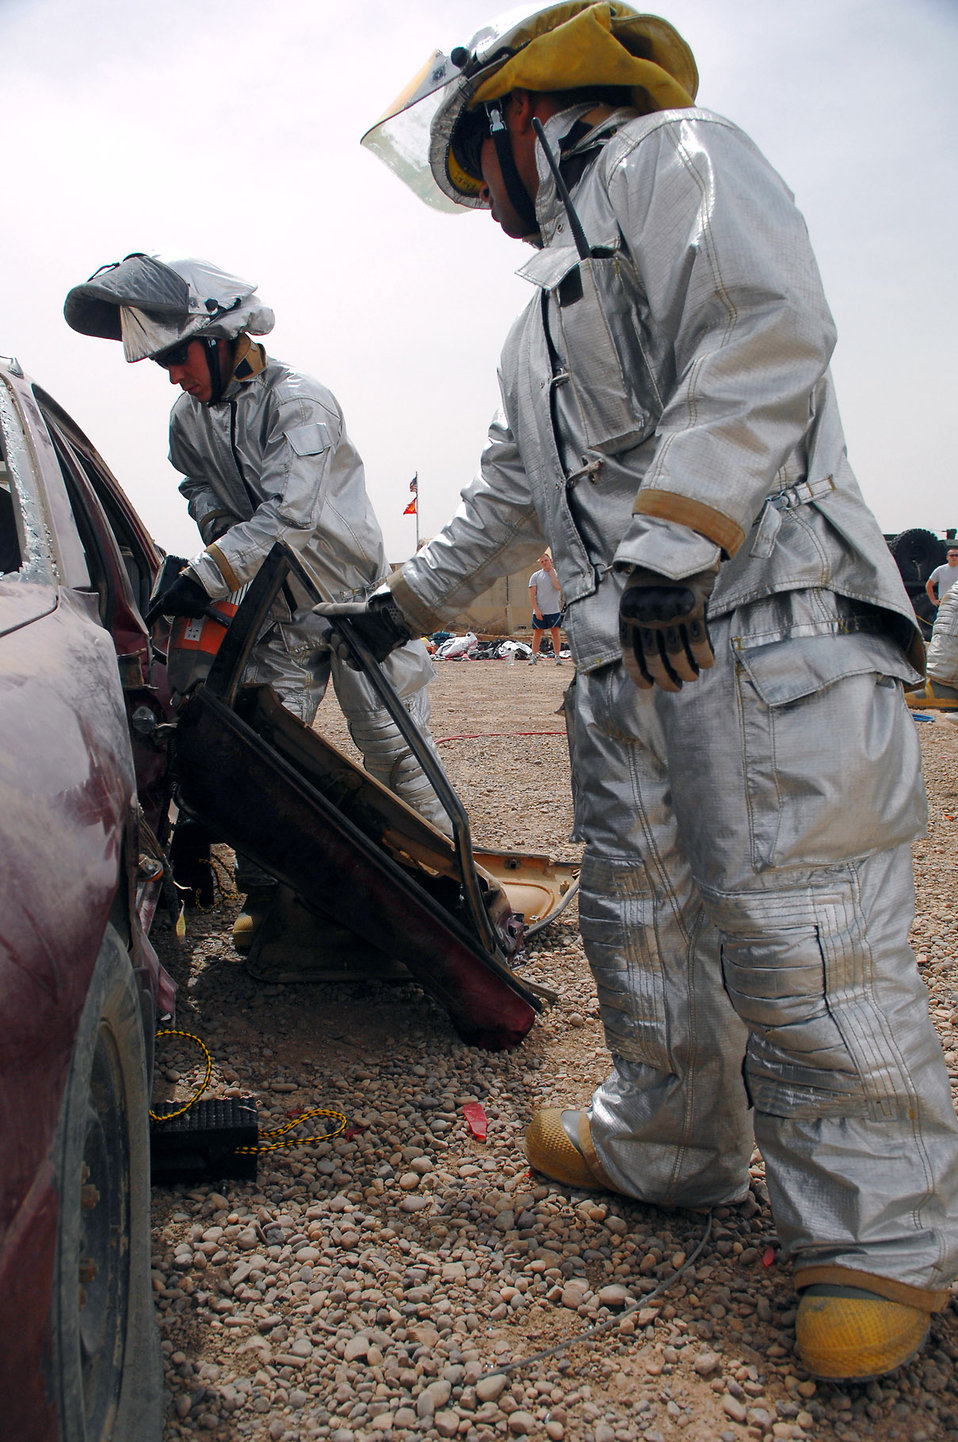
Bustin' in

Staff Sgt. Michael Reece and Airman 1st Class Matthew Kahai cut a door off a car during vehicle extrication training April 5 at Balad Air Base, Iraq. Extrication training teaches firefighters how to rescue people trapped in vehicles. Sergeant Reece is a reservist from Seymour Johnson Air Force Base, N.C., and Airman Kahai is deployed from Minot AFB, N.D. Both are 332nd Expeditionary Civil Engineer Squadron firefighters.